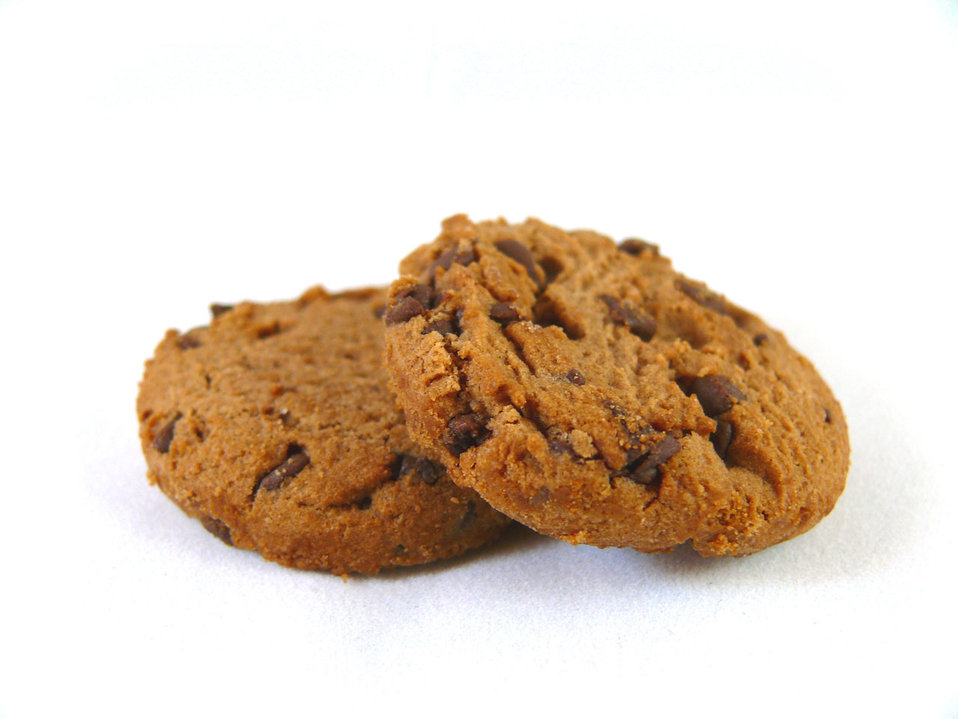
Cookies

Two cookies on white backround.